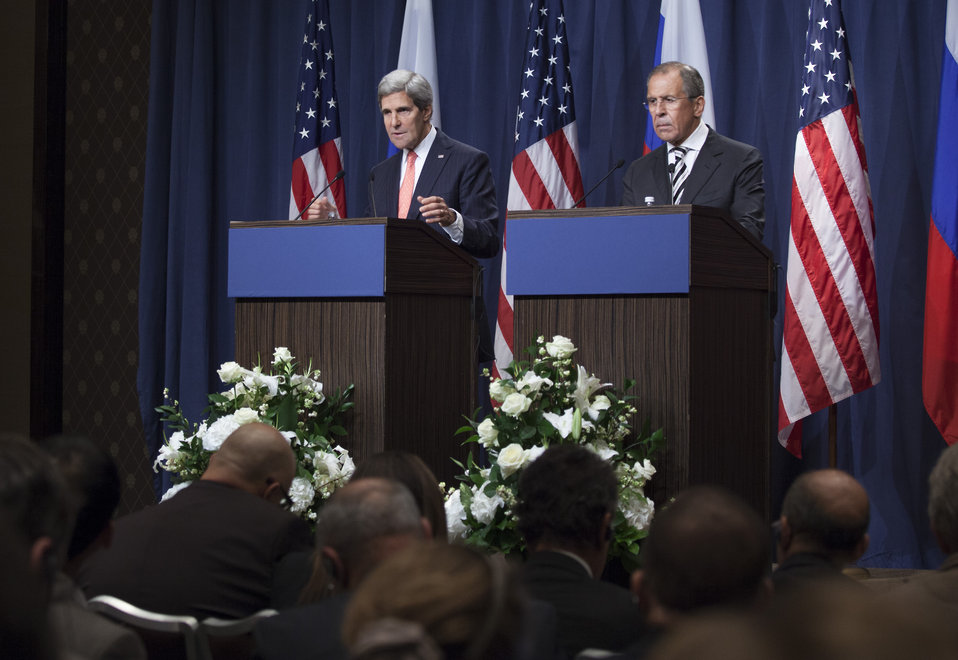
Secretary Kerry Speaks at News Conference with Foreign Minister Lavrov

U.S. Secretary of State John Kerry and Russian Foreign Minister Sergey Lavrov hold a news conference after the two finalized a framework for the elimination for Syrian chemical weapons in Geneva, Switzerland, on September 14, 2013.